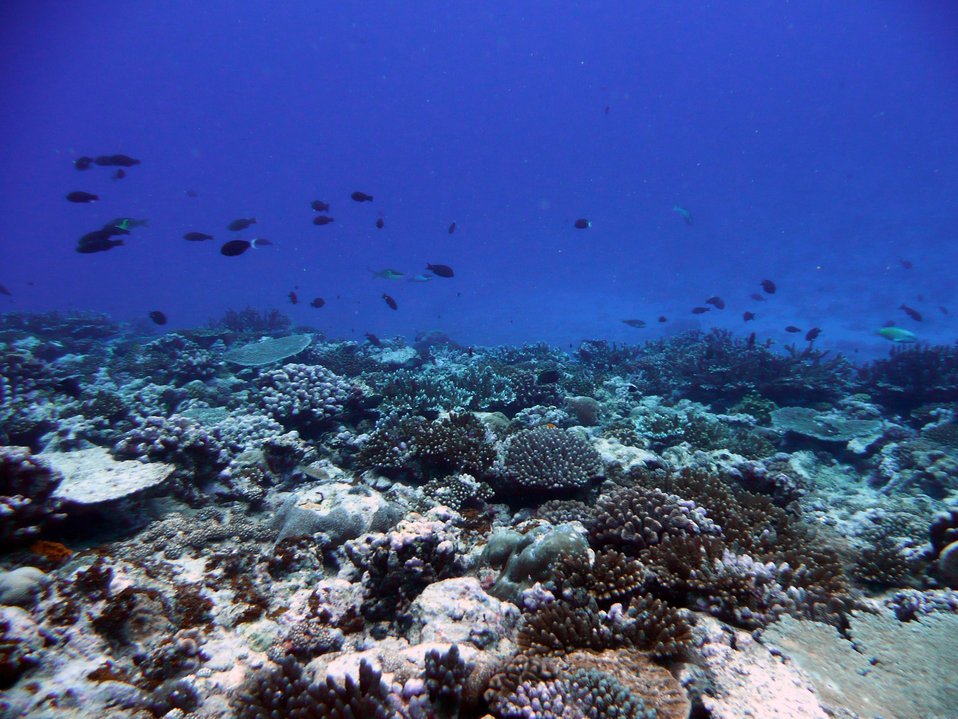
Reef scene